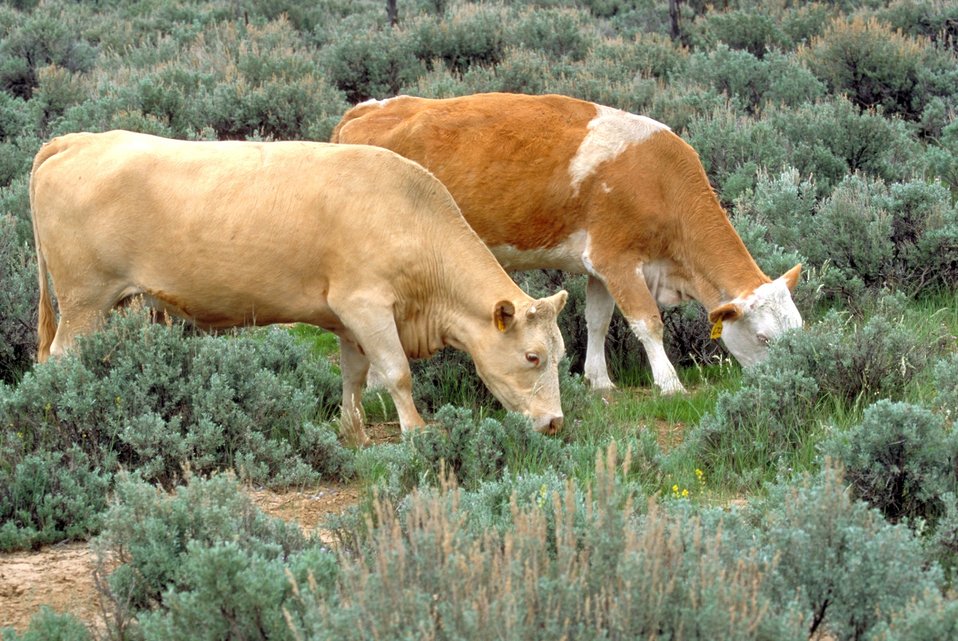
Livestock grazing on BLM lands near Price, Utah.